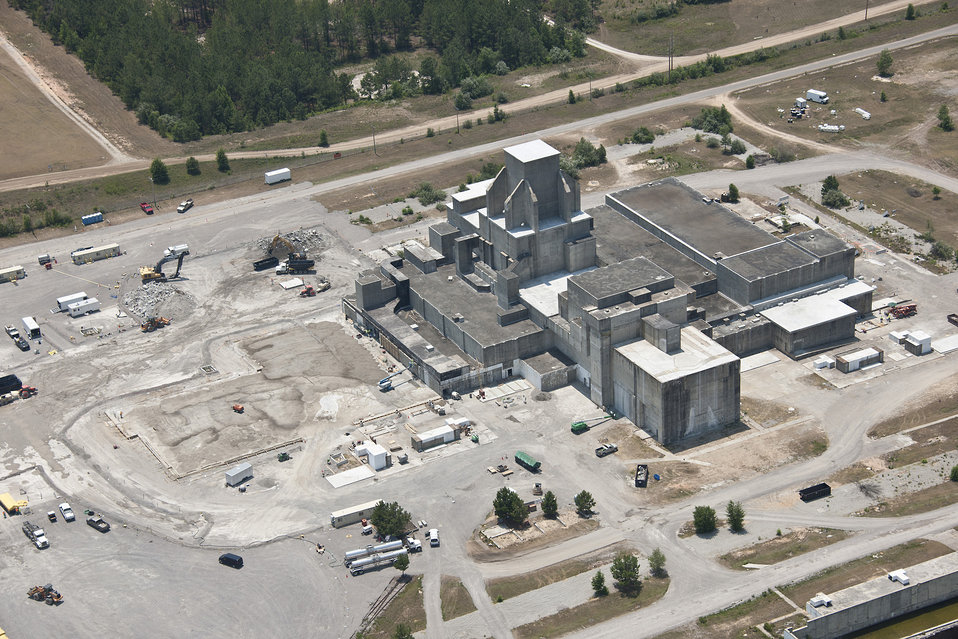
Aerial Photo of P Reactor

The P Reactor, shown here, and the R Reactor, underwent in-situ decommissioning this year. The project involved filling the reactor buildings with more than 260,000 cubic yards of a cement-like material called grout — which would fill 80 Olympic-size swimming pools — so the buildings remain sealed and intact. Decommissioning the reactors is part of Savannah River Site’s $1.6 billion Recovery Act Program.